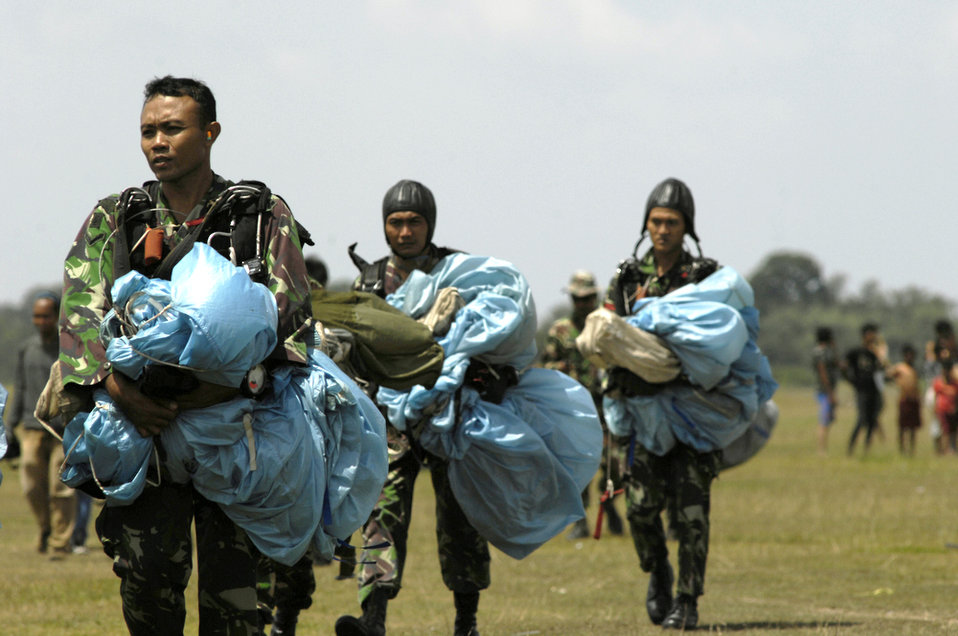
U.S., Indonesian airment jump into training

Indonesian airmen complete a high-altitude, low-opening jump from an Air Force C-130 Hercules assigned to the 36th Airlift Squadron at Yokota Air Base, Japan, during Exercise Cope West 2010 April 21, 2010, in Indonesia.